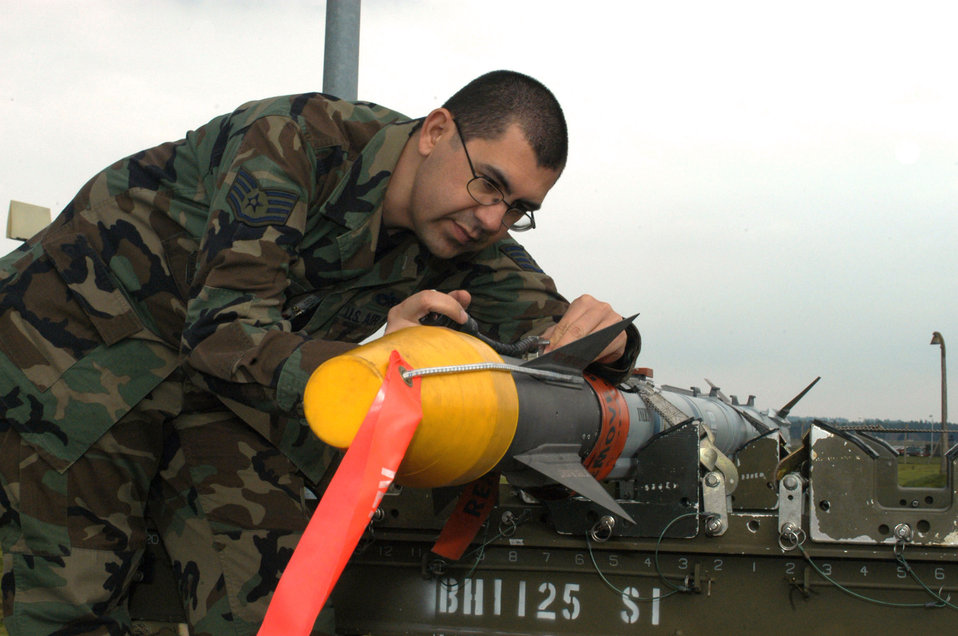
Lakenheath Airman lauded for 'cutting edge' efforts

ROYAL AIR FORCE LAKENHEATH, England -- Staff Sgt. Antonio Guerrero inspects the umbilical cable and block connection on an Air Intercept Missile-9X. Sergeant Guerrero was one of two people who received the first Air Intercept Missile-9X Cutting Edge Award. He is assigned to the 48th Munitions Squadron here.